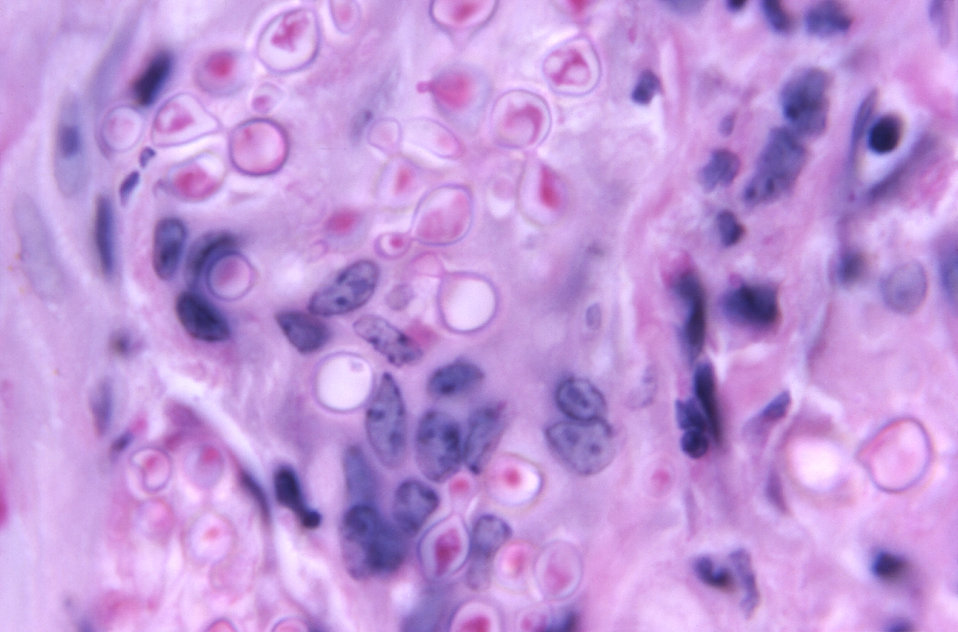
Under a magnification of 1125X, this PAS-stained (periodic-acid-Schiff) photomicrograph of a Florida dolphin tissue sample, revealed some of the histopathologic cytoarchitectural changes associated with what was determined to be a case of lobomycosis due to the fungus, Lacazia loboi, formerly known as Loboa loboi. Usually, lobomycosis is seen in humans and dolphins.